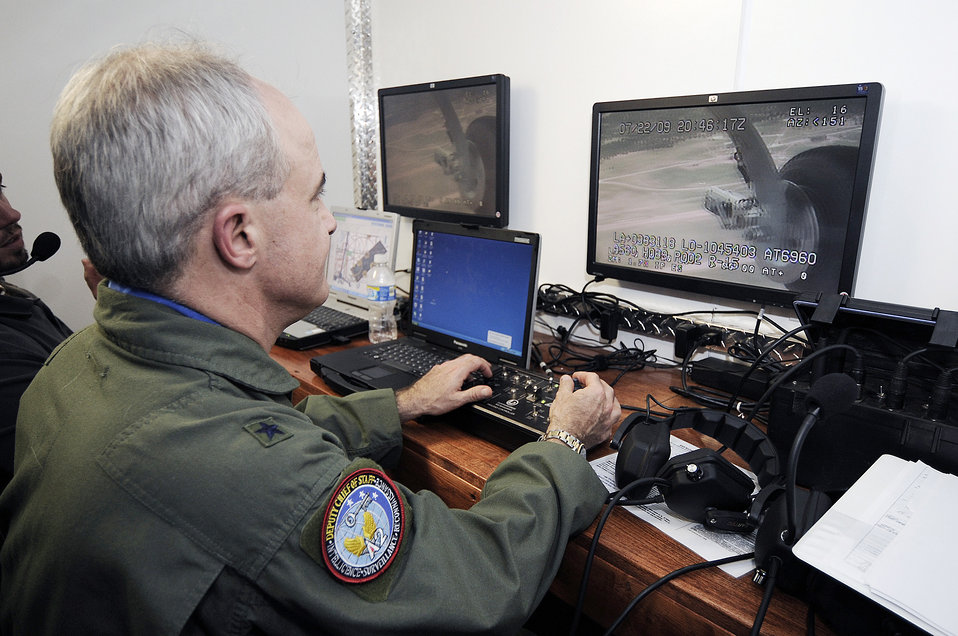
Academy officials add unmanned aircraft system into curriculum

Brig. Gen. James O. Poss controls the camera on the U.S Air Force Academy's Viking 300 unmanned aircraft systems July 22 over Camp Red Devil at Fort Carson, Colo. General Poss is the director of intelligence, surveillance and reconnaissance capabilities, and the deputy chief of staff for ISR at the Pentagon.